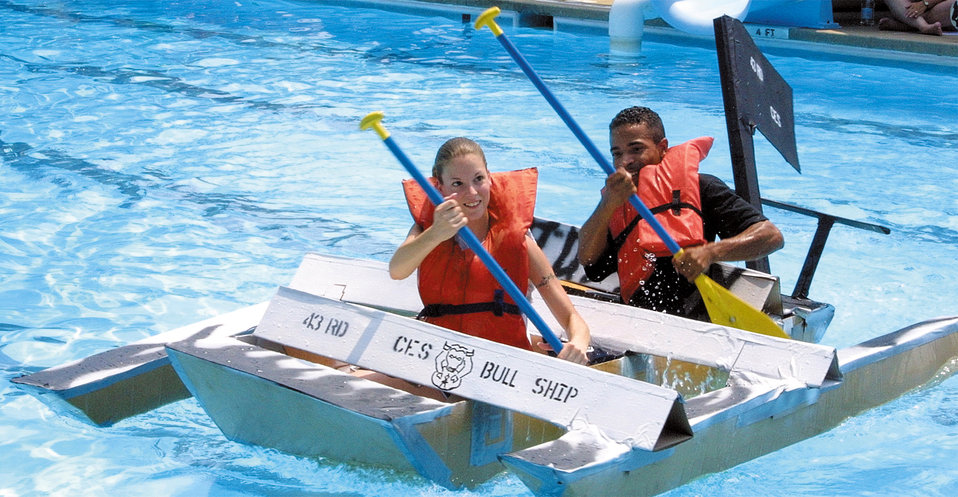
Sink or swim

POPE AIR FORCE BASE, N.C. -- Navigating the choppy waters of a pool here, Senior Airman Heather Hackler and Staff Sgt. Eric Rossin guide their cardboard vessel July 14. Their 43rd Civil Engineer Squadron ship won the most-creative vessel award. During the event, Airmen from each squadron race a boat made of cardboard and duct tape.